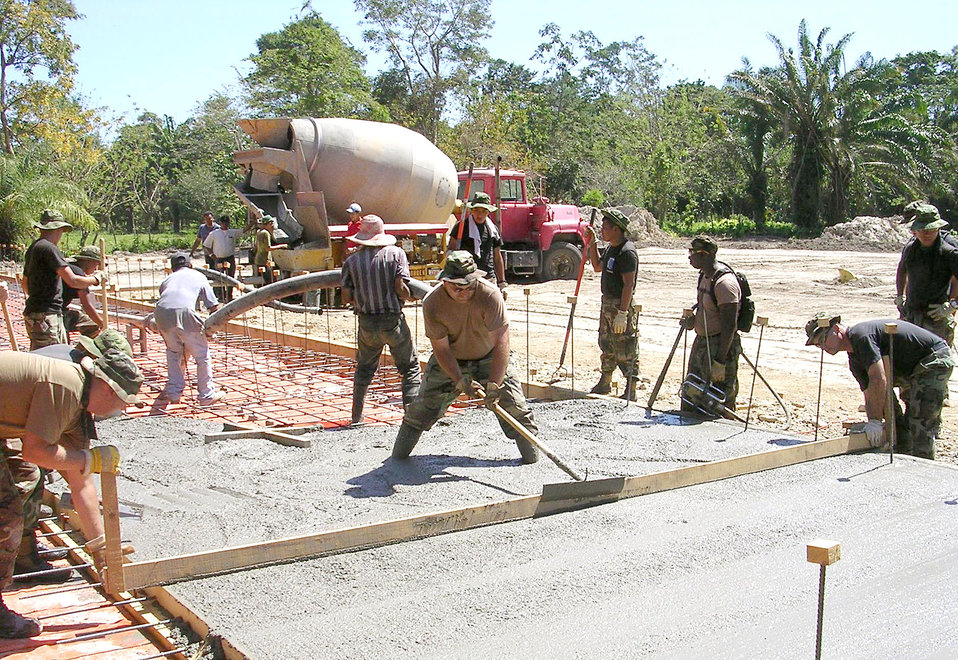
Alaskan team build school in Honduras

Tech. Sgt. Tim Parault (middle) helps smooth a concrete foundation. Sergeant Parault is among 17 Airmen deployed from the 354th Civil Engineer Squadron at Eielson Air Force Base, Alaska, in support of New Horizons 2006-Honduras. The 354th is building a three-classroom school in the small village of El Cacao.